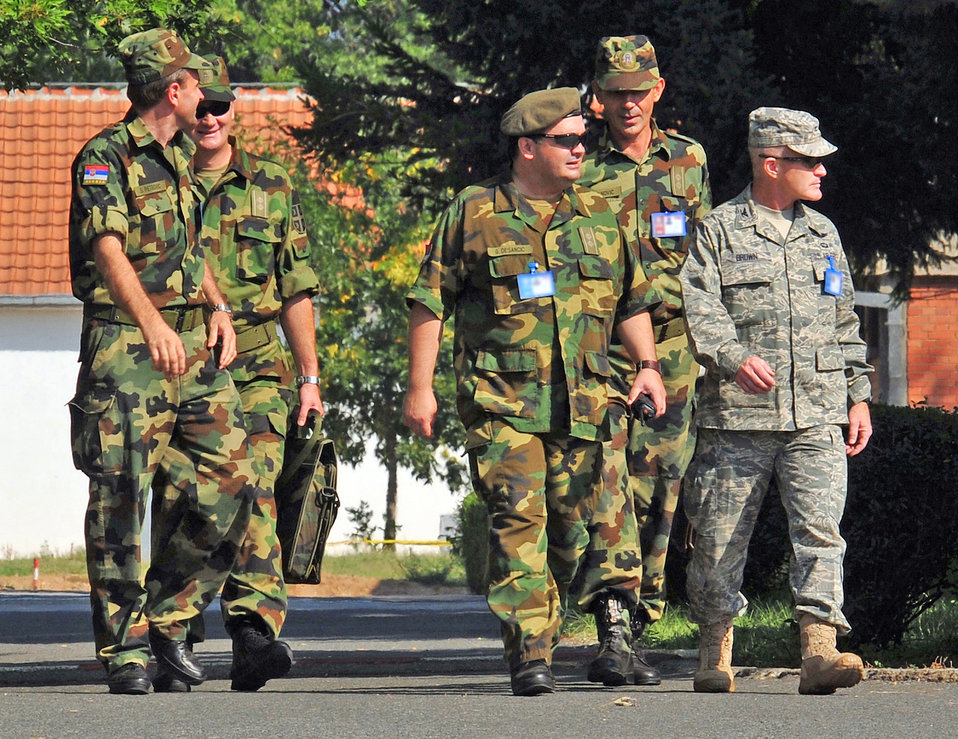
Ramstein Airmen support 15-nation medical training exercise

Col. Tim Brown (right) receives a tour of the Knez Mihailo Barracks grounds from a group of Serbian armed forces officers Aug. 29, 2009 in Nis Serbia. Colonel Brown, along with 31 fellow 435th Air Ground Operations Wing members, deployed to Serbia for two weeks in support of the Medical Training Exercise in Central and Eastern Europe 2009. Colonel Brown is the 435th Expeditionary Air Ground Operations Group commander.